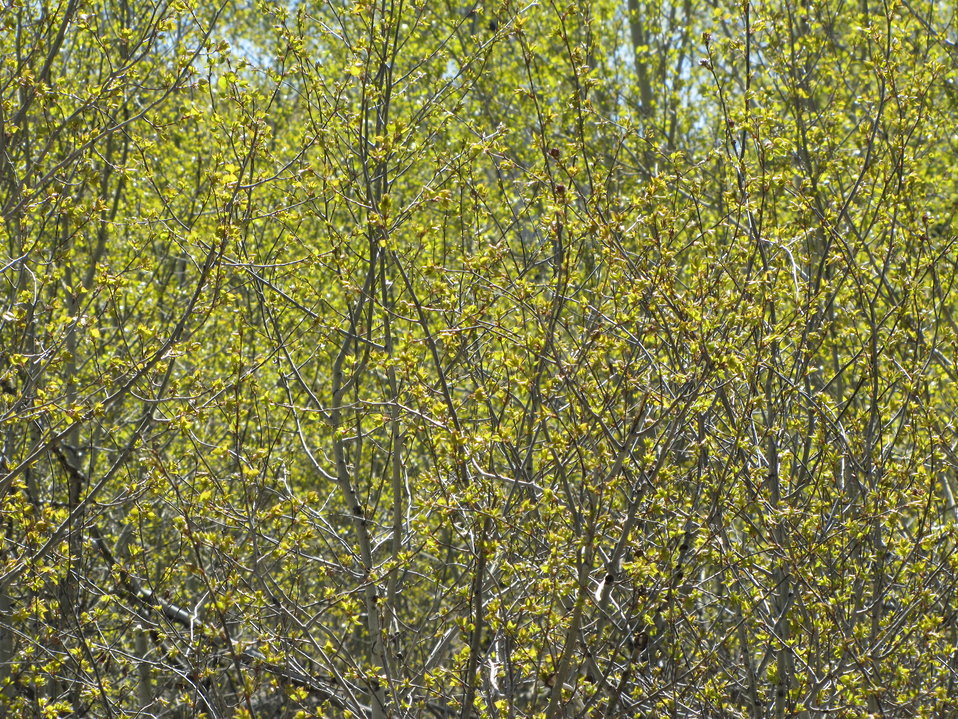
Leafing Out

A group of aspens present new growth on a May morning.